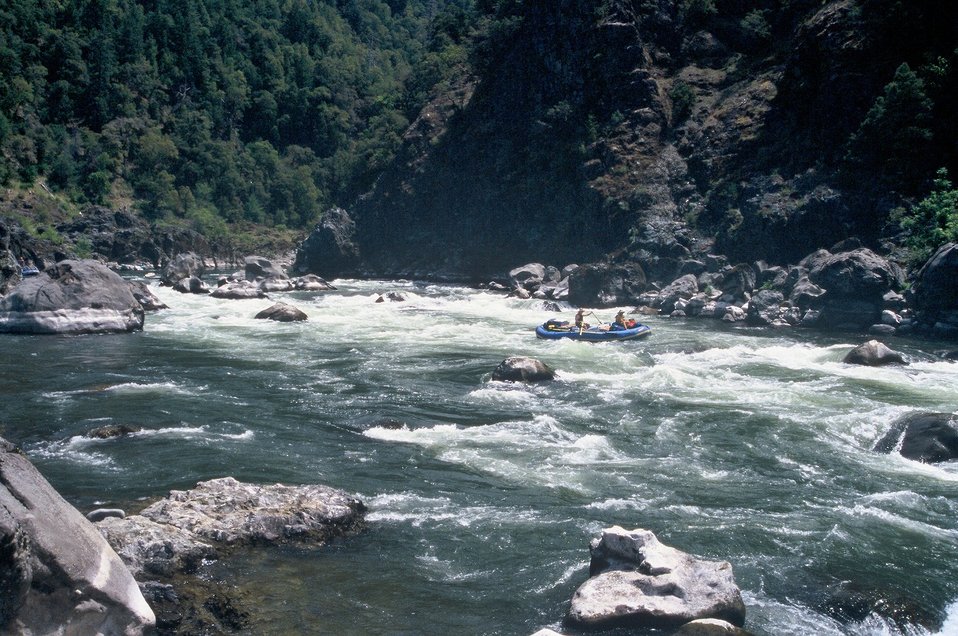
Wild section of the Rogue River from Grave Creek to Foster Bar May 19 to May 22.